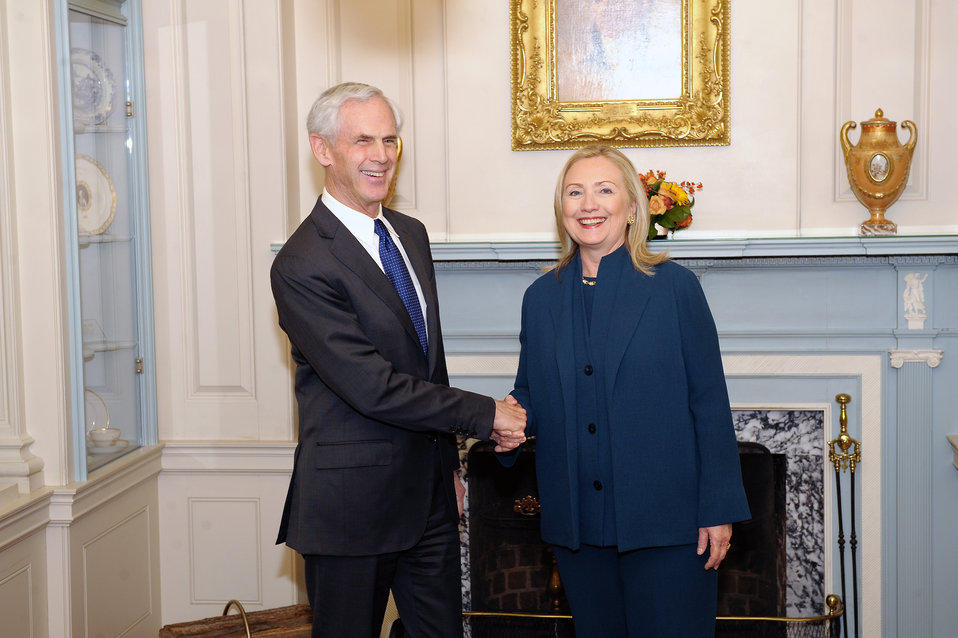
Secretary Clinton Meets With Secretary Bryson

U.S. Secretary of State Hillary Rodham Clinton meets with U.S. Secretary of Commerce John Bryson at the U.S. Department of State in Washington, D.C., on October 31, 2011.